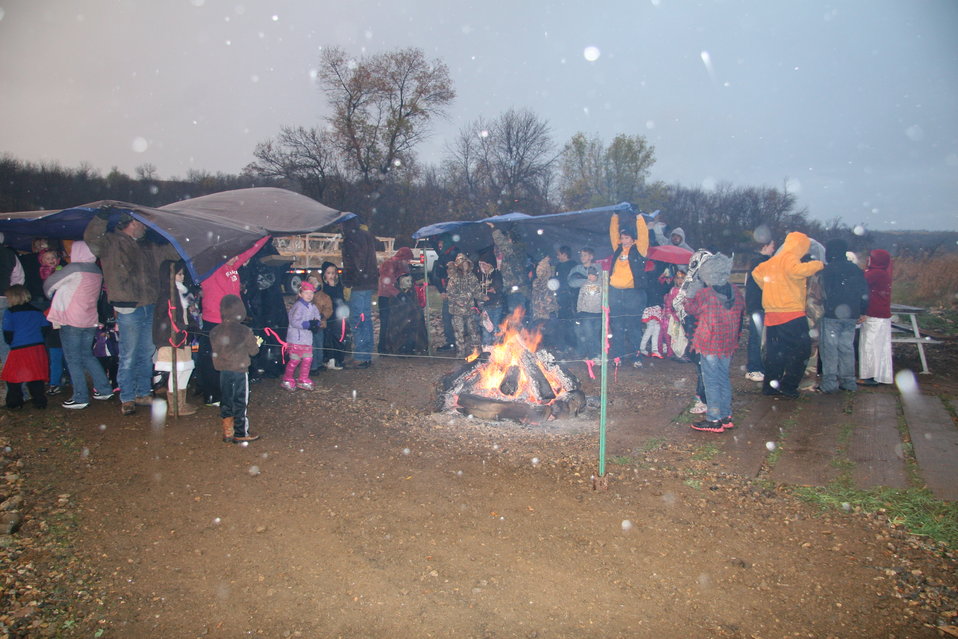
Haunted Hayride

Rain showers didn't stop the fun!